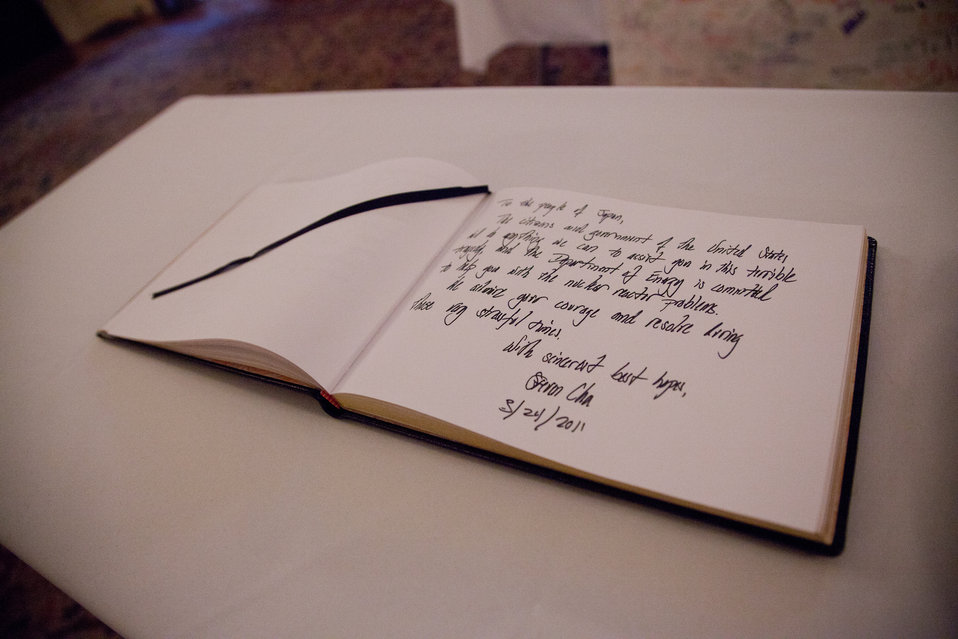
Sec. Chu visits Japanese Embassy 1 of 8

A book of Condolences, as signed by Sec. Steven Chu.